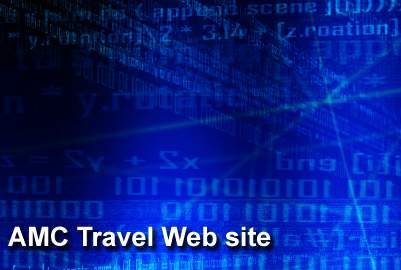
AMC officials unveil official travel Web site

People planning to travel the Air Mobility Command military travel system can now point their Web browsers to http://www.amc.af.mil/amctravel/index.asp for the latest in AMC travel information.